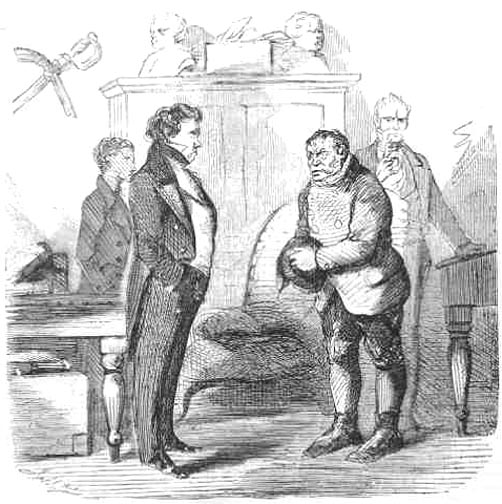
Great Expectations, Jaggers, threatening Mike in his office, with Pip and Wemmick standing in the background, by John McLenan Français : Les Grandes Espérances, Jaggers menaçant Mike dans son bureau Pip et Wemmick se tenant en retrait.